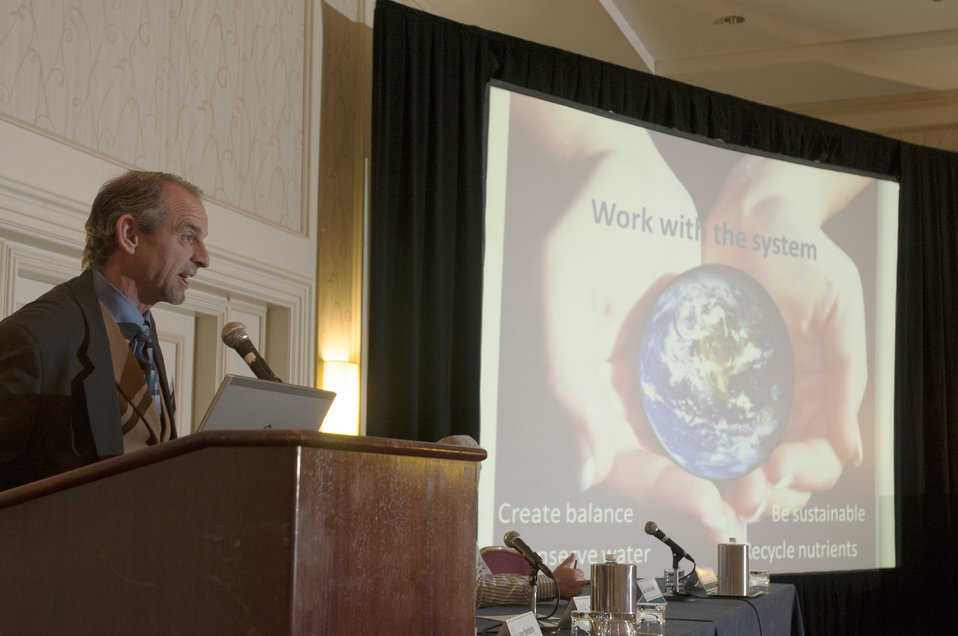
U.S. Department of Agriculture (USDA) Agricultural Research Service Grassland Soil and Water Research Laboratory Soil Scientist Rick Haney talks about the sources of nutrients around us, but focus on management of chemicals on land to produce crops sustainably and what carbon sequestration means to soil health, during the 2013 Agricultural Outlook Forum, held at the Crystal Gateway Marriott Hotel in Arlington, VA on Friday, Feb. 22, 2013. The theme of this breakout session is Reducing Risks by Improving Soil Health, and the indicators of soil health, to reduce chemical inputs and apply the right techniques for sustainable production and other benefits. Soil health is defined as the capacity of the soil to function as a living ecosystem that sustains plant, animal, and human health with limited human intervention.
His presentation is at www.usda.gov/oce/forum/presentations/Haney.pptx.